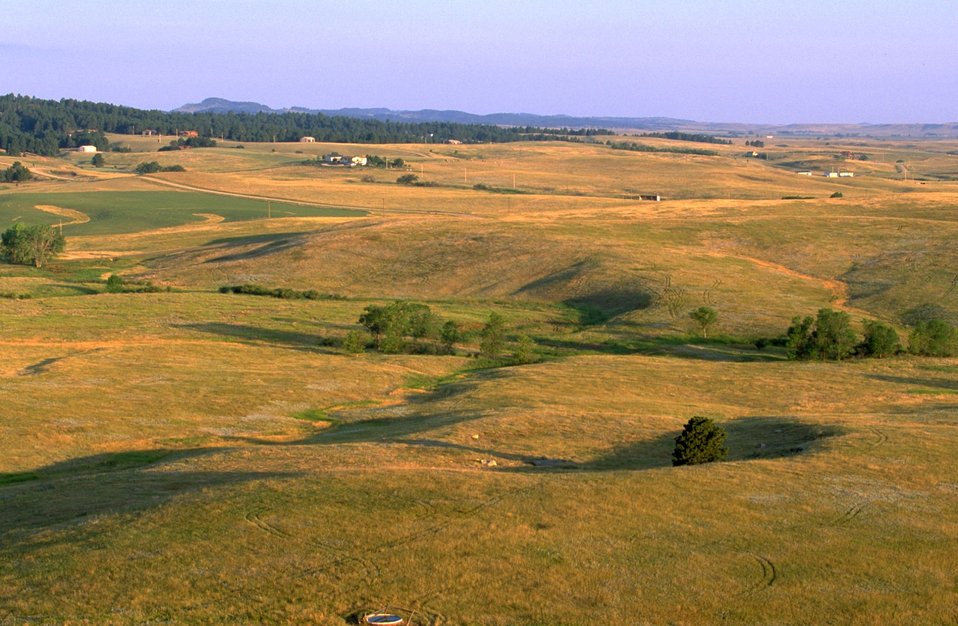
Spring Creek at the north end of Fort Meade